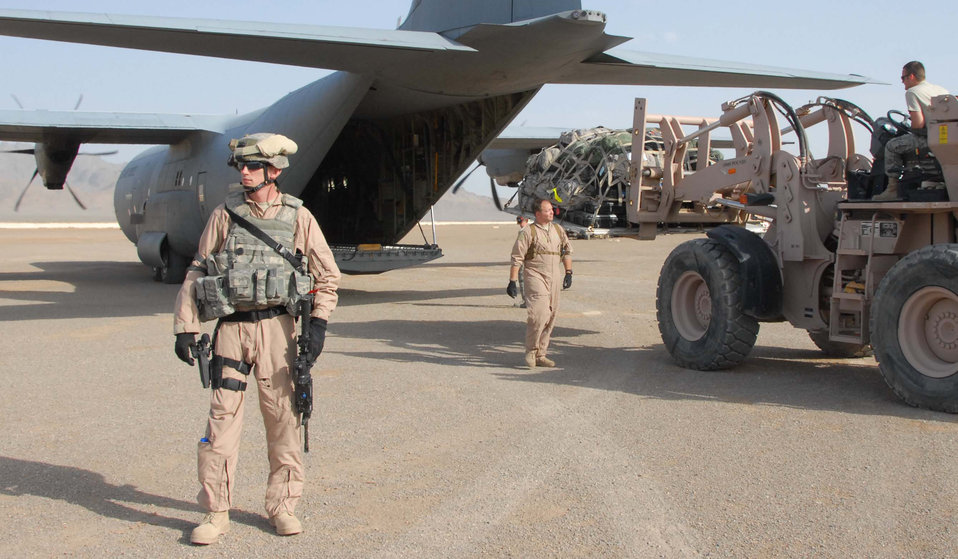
FAST defenders keep fliers safe in Afghanistan

Fly Away Security Team Leader Staff Sgt. Mark King guards a C-130 Hercules April 10, 2011, in Afghanistan. FAST members are the first to step off the plane on an unsecured runway, which may have no fence or security. The Airmen will sweep the area for explosives, then watch for suspicious people who try to approach or board the aircraft. Sergeant King is assigned to the 451st Expeditionary Security Forces Squadron.